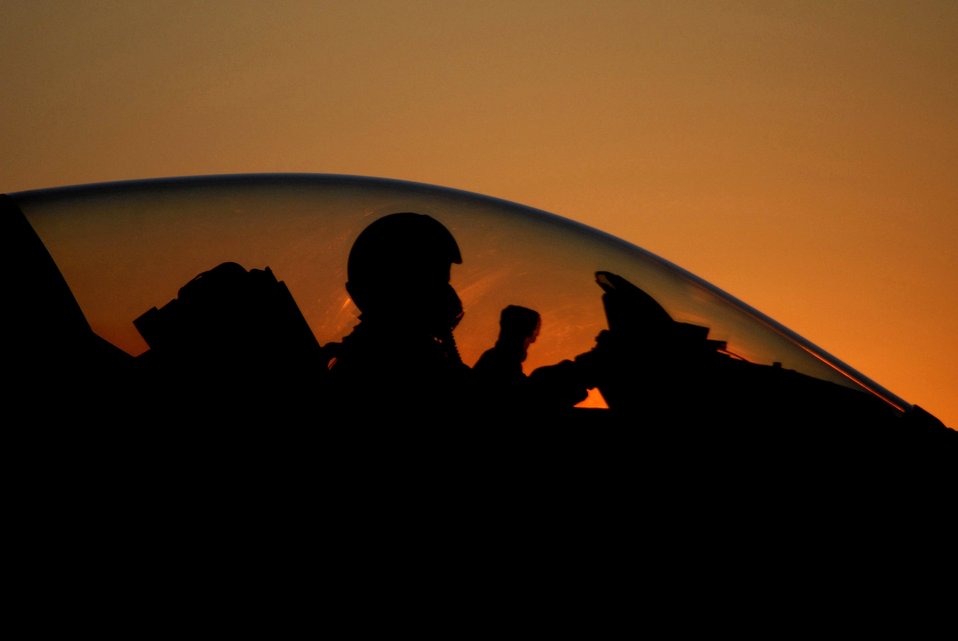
Feb. 25 airpower summary: F-16s target enemy compound

Maj. Shawn West returns to Balad Air Base, Iraq, Feb. 1, following a combat mission. Major West is an F-16 Fighting Falcon aircraft pilot from 332nd Expeditionary Fighter Wing.